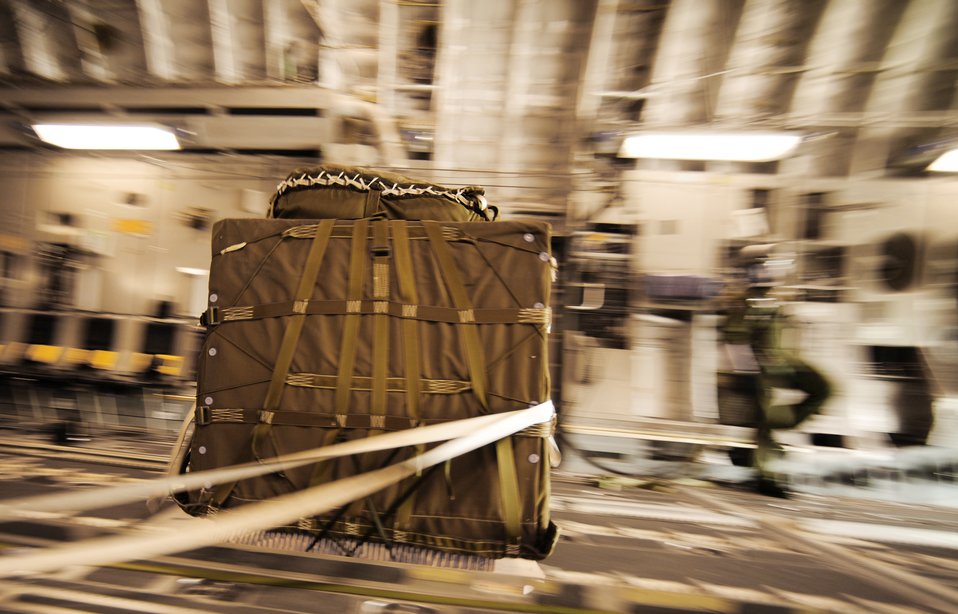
Charleston loadmasters prepare for training mission

A cargo load is ready to plunge over the drop zone during a local training mission at North Field near Charleston Air Force Base, S.C., April 5, 2010.